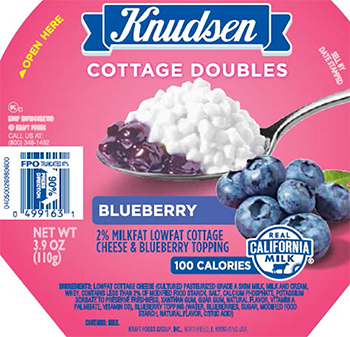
RECALLED – Cottage Cheese products

May 17, 2014 – Product Recall – Kraft Foods Group Voluntarily Recalls Select Cottage Cheese Products Due to Out-of-Standard Storage Temperatures
Certain Knudsen Cottage Cheese, Breakstone’s Cottage Cheese, Simply Kraft Cottage Cheese and Daily Chef Cottage Cheese Products Included in the Recall
.